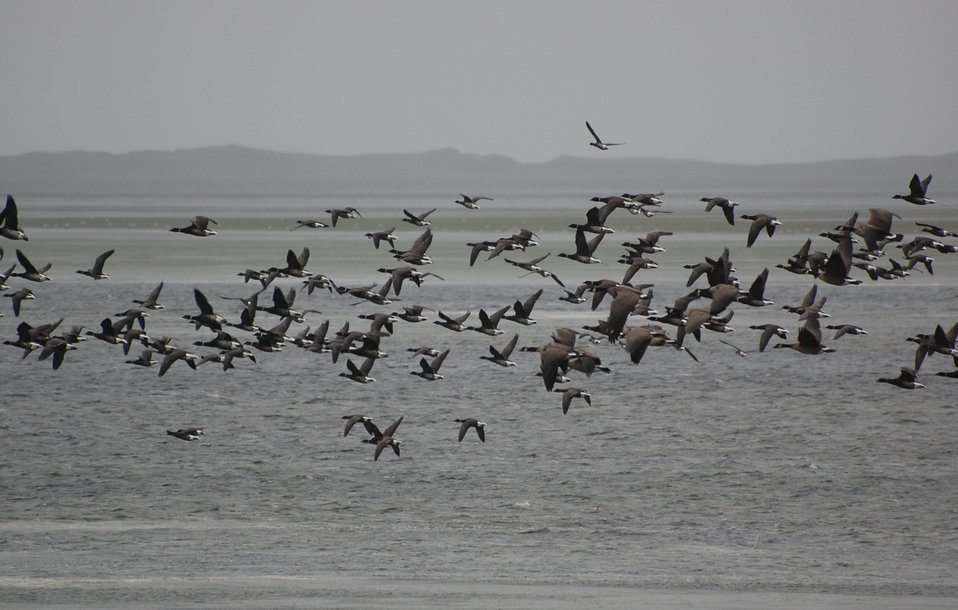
Brant at Izembek Lagoon

Izembek National Wildlife Refuge